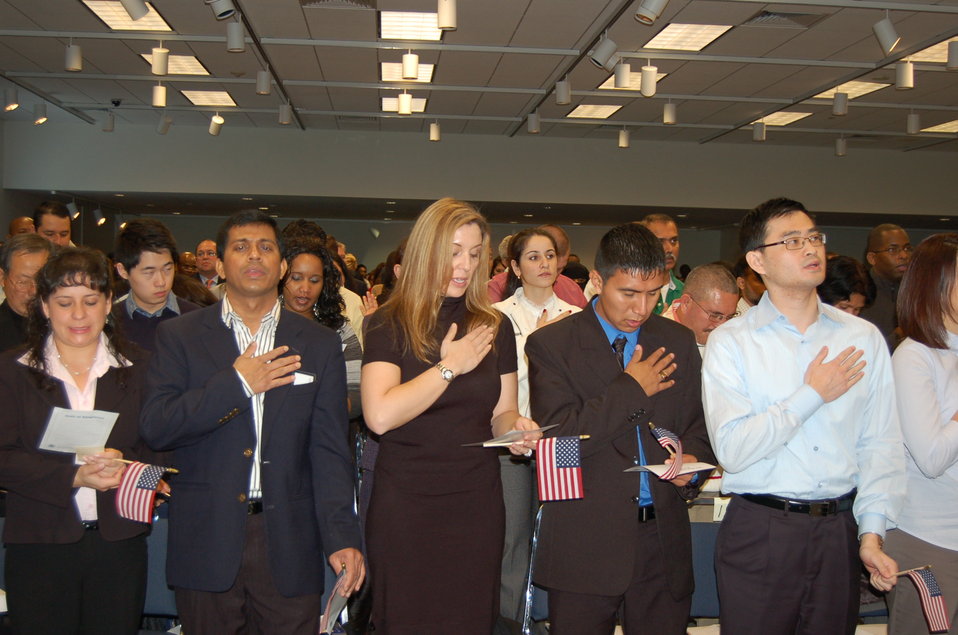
Saying the Pledge of Allegiance